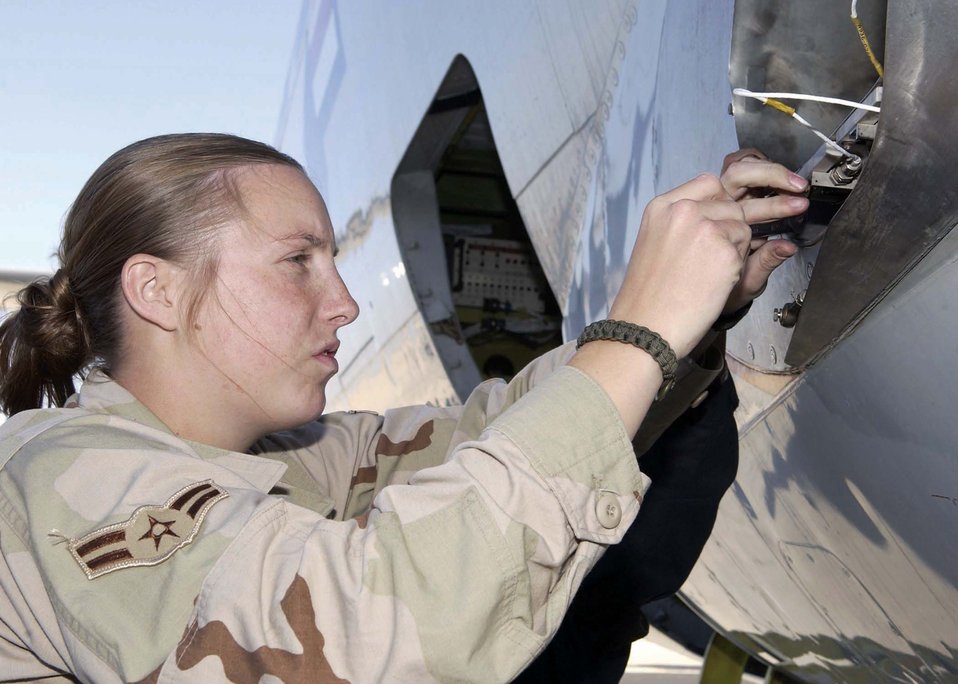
Joint STARS duo reaches troops on the ground

SOUTHWEST ASIA -- Airman 1st Class Michelle Bresson works on an E-8C Joint STARS. She is an electrical and environmental systems specialist with the 379th Air Expeditionary Wing at a forward-deployed location here from Robins Air Force Base, Ga.